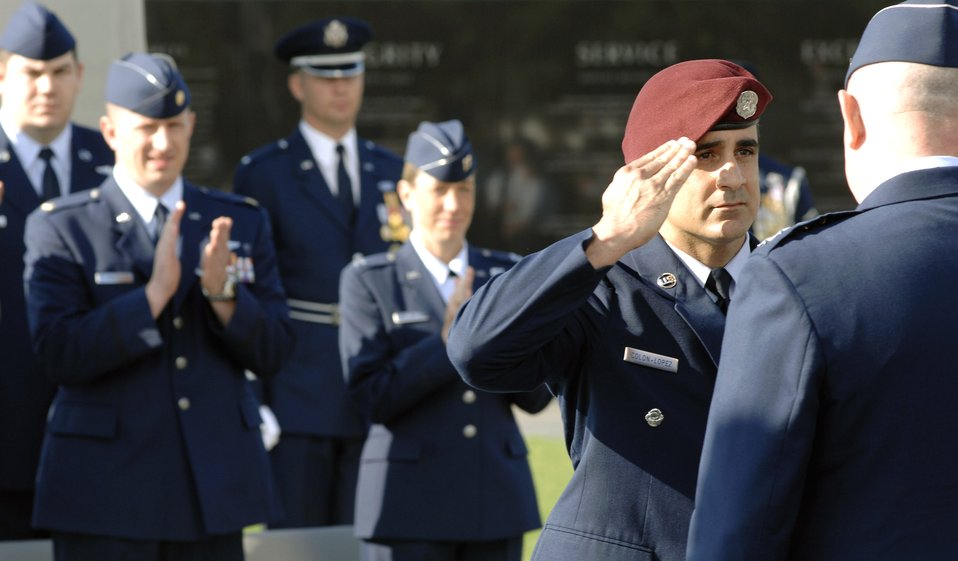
Air Force Combat Action Medal

Senior Master Sgt. Ramon Colon-Lopez salutes Air Force Chief of Staff Gen. T. Michael Moseley after being presented the Air Force Combat Action Medal. The medal was presented to six Airmen in a ceremony held at the Air Force Memorial June 12 in Arlington, Va., June 12.